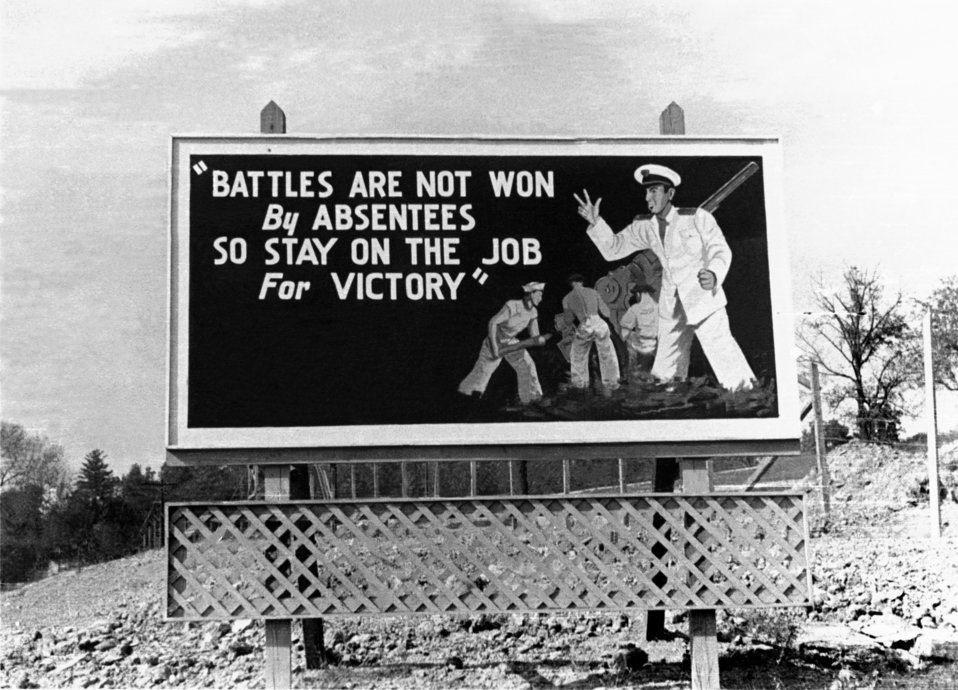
Billboard Oak Ridge During World War II

ROLL97-17 DOE photo by Ed Westcott

Billboard Oak Ridge Tennessee 10/11/43